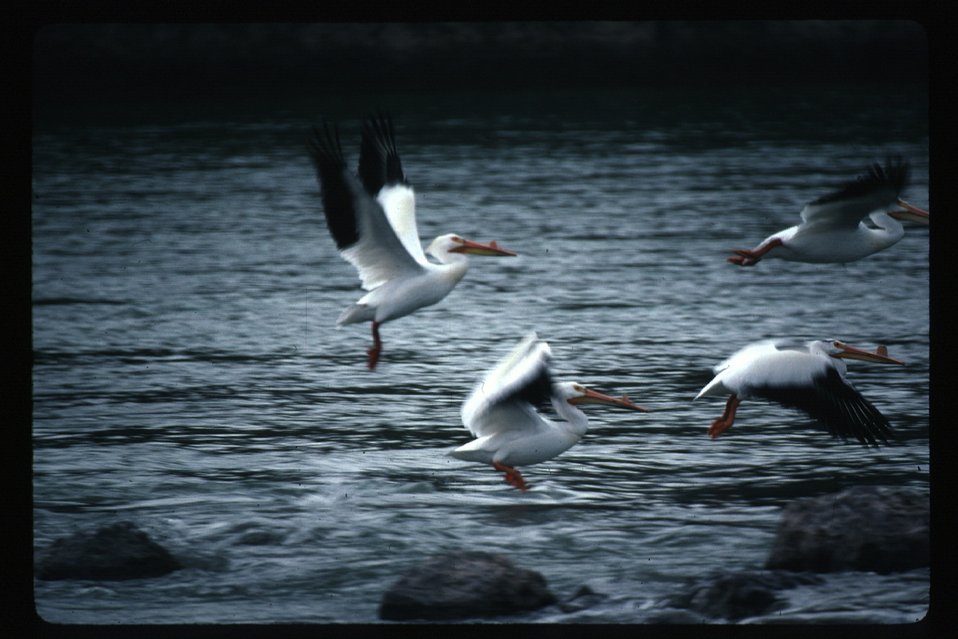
Pelicans on Snake River Wildlife USRD Upper Snake River District